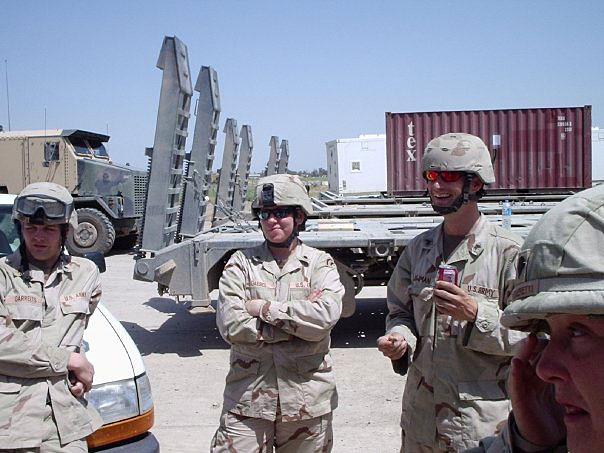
Ryan E. Gaebel -- Midwest Region

Ryan E. Gaebel, Administrative Officer at the Minnesota Private Lands Office in Waite Park, began serving in the Army National Guard in 1999 and continues to serve today.The picture is from Operation Iraqi Freedom III in 2005 (She is in the middle with arms crossed).